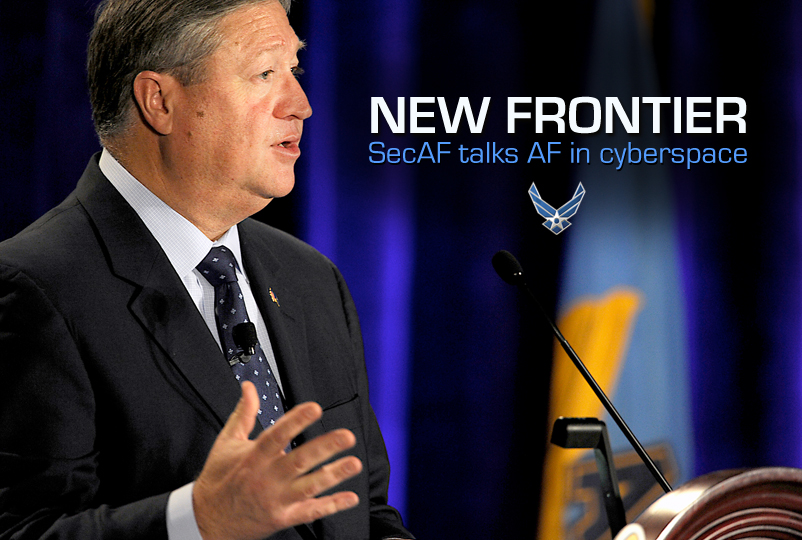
New Frontier